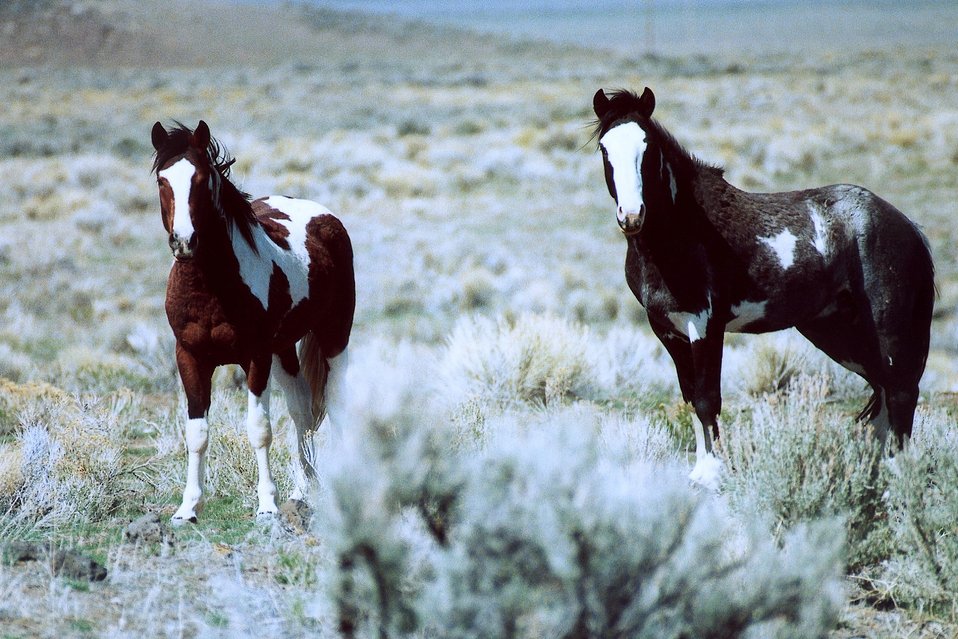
Medium shot of two bachelor stallions.